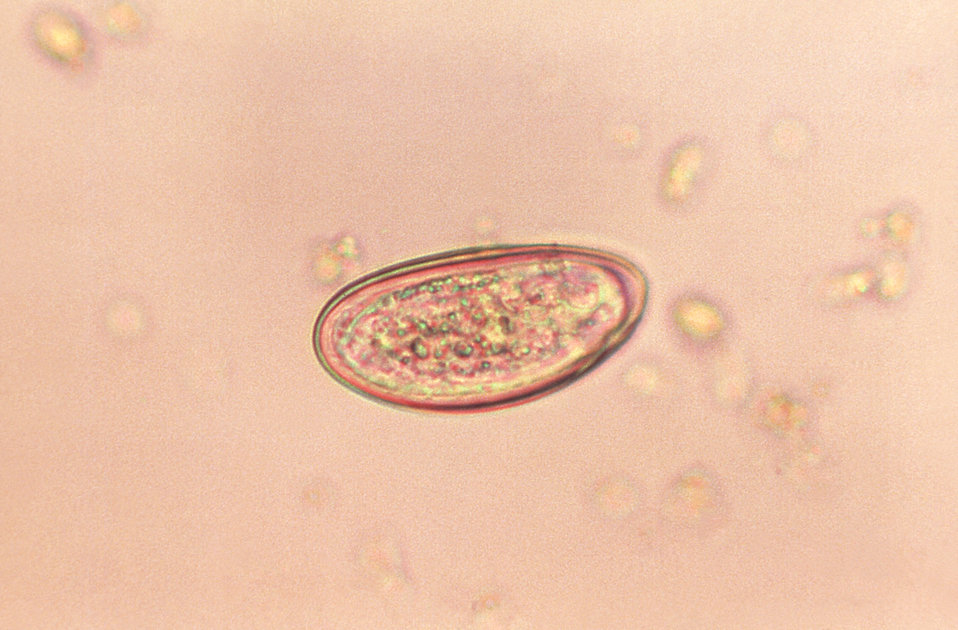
This photomicrograph reveals some of the ultrastructural details of an Enterobius vermicularis egg, otherwise known as the ''human pinworm''.